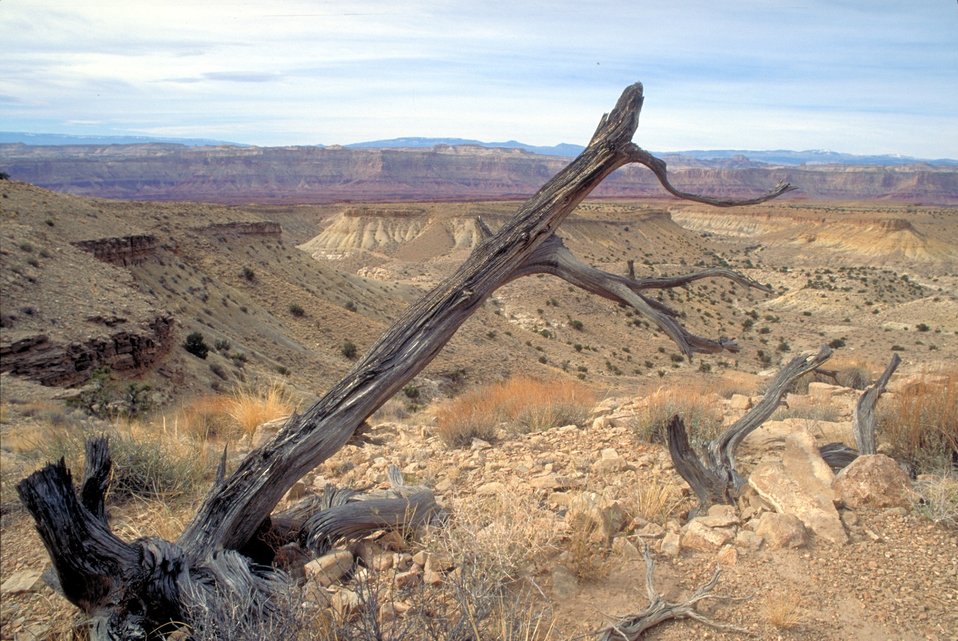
Red Canyon Loop, San Rafael Swell.